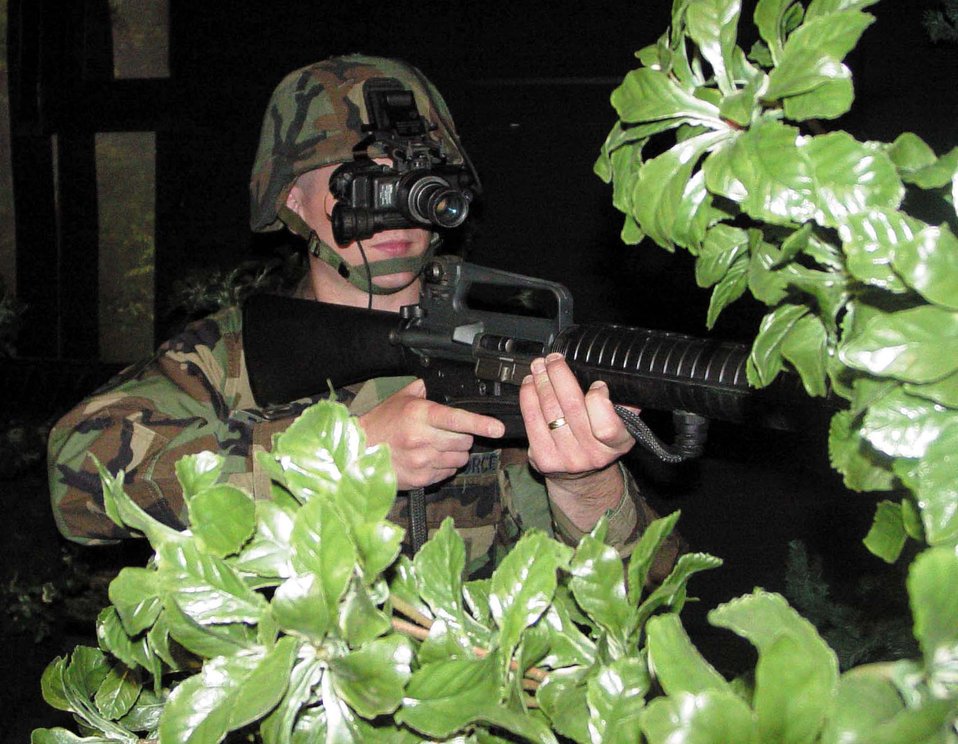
Simulator prepares Airmen for combat

MINOT AIR FORCE BASE, N.D. -- Staff Sgt. Jonathan Tourville uses night-vision goggles to maneuver through a darkened course at the combat-arms tactics and training simulator here April 2. He is assigned to the 91st Security Support Squadron.